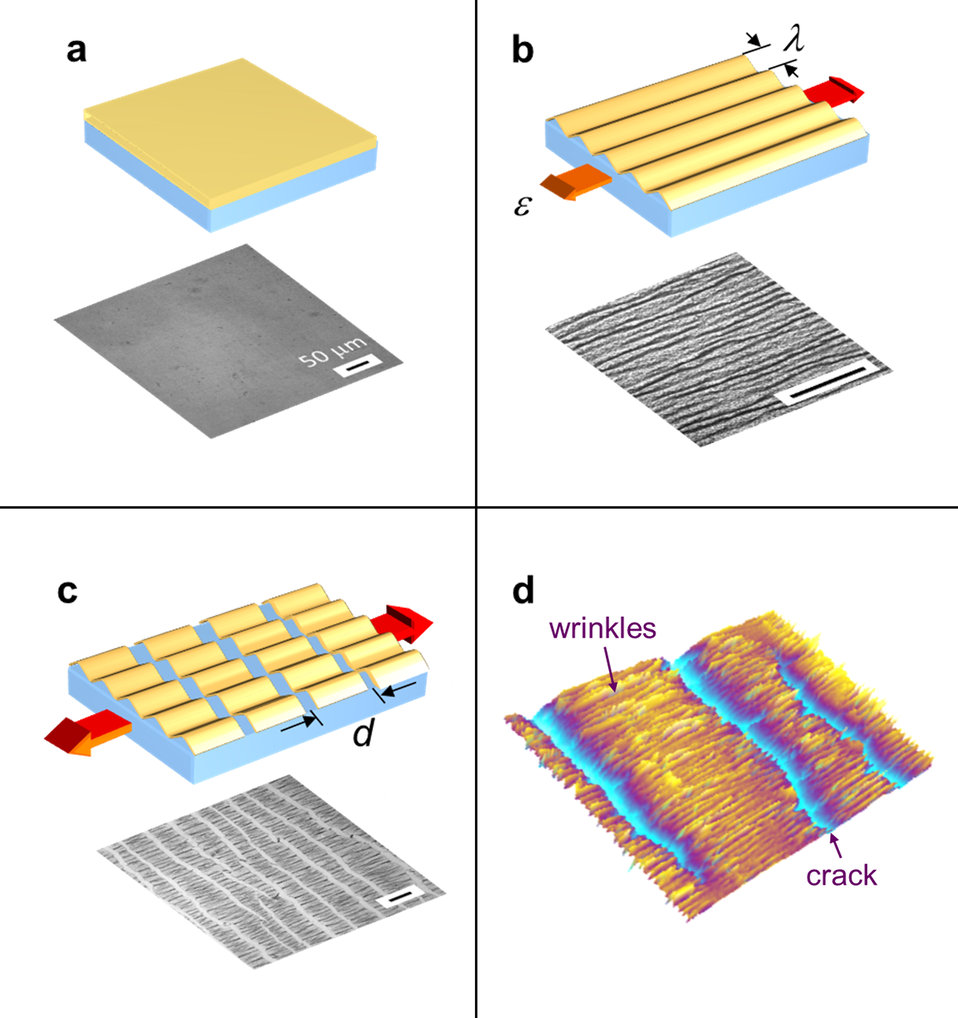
Nanomechanical measurements (model system and microimage of typical specimen). a) thin rigid film on elastic substrate b) initial strain induces surface wrinkles parallel to stress c) additional strain induces regular pattern of cracks in the film d) typical specimen imaged with optical profilometer (280 X 210 micrometers.)